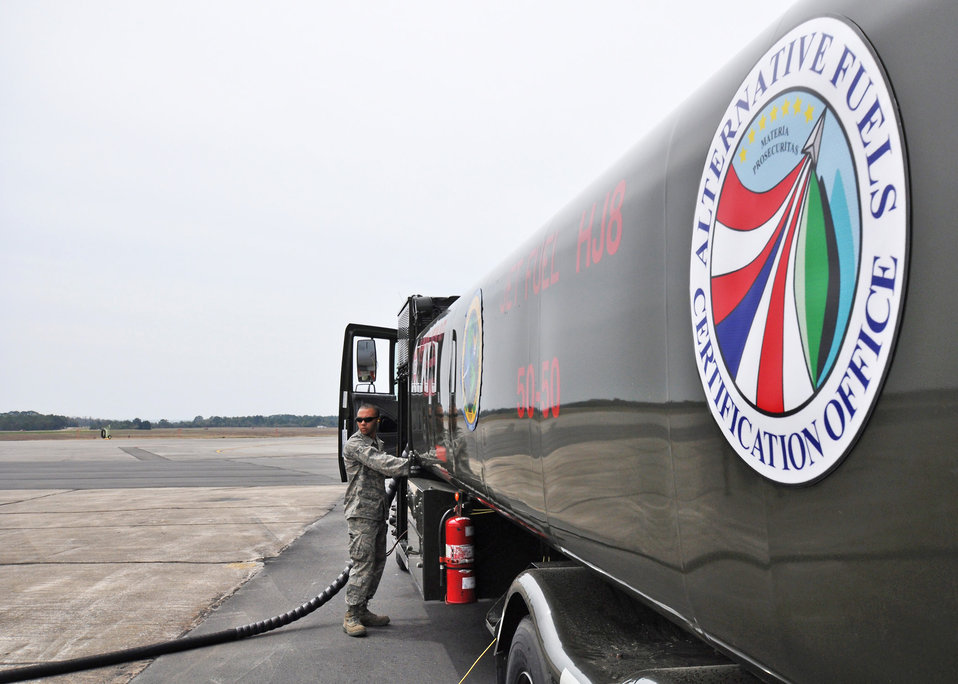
Air Force scientists test, develop bio jet fuels

An Airman prepares to fuel an A-10 Thunderbolt II March 25, 2010, with a 50/50 blend of Hydrotreated Renewable Jet and JP-8 at Eglin Air Force Base, Fla. The A-10 then flew what was the first flight of an aircraft powered solely by a biomass-derived jet fuel blend.